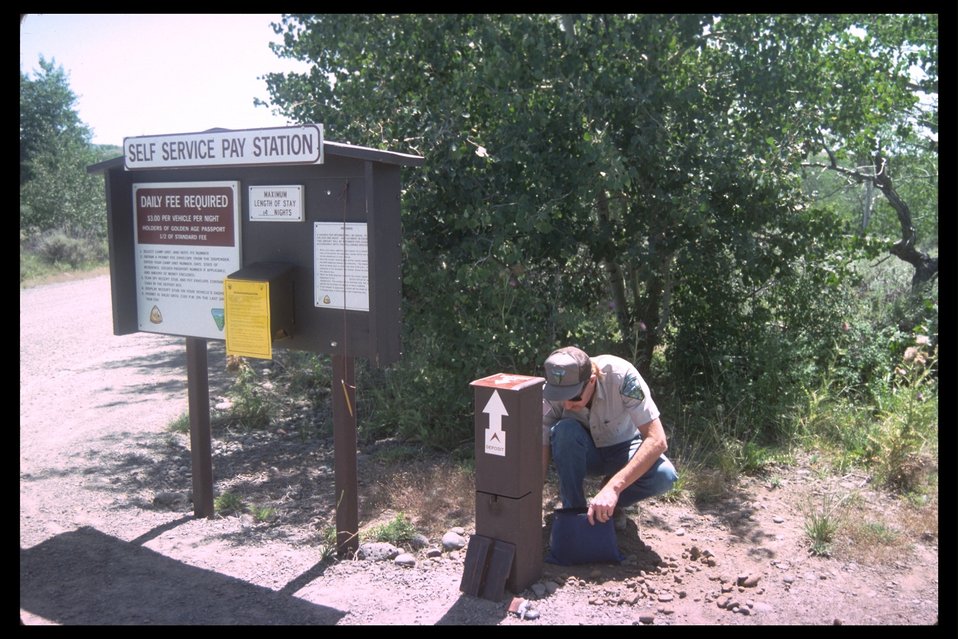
Fred McDonald removing campground fees from fee box.